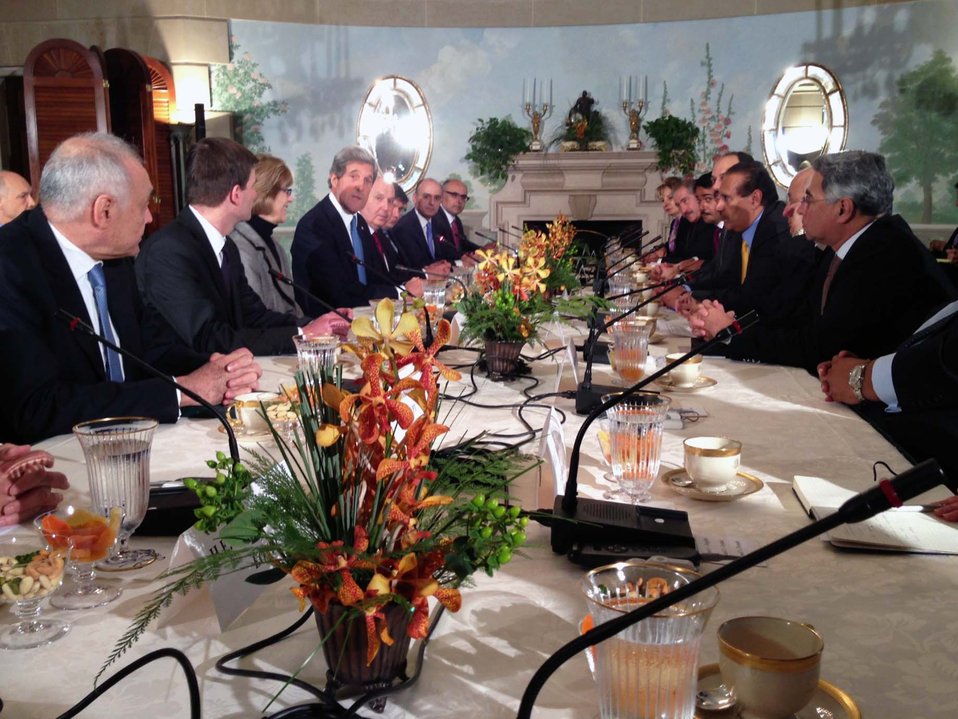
Secretary Kerry Holds a Meeting with the Arab League Delegation

U.S. Secretary of State John Kerry holds a meeting with the Arab League delegation, led by Qatari Prime Minister and Foreign Minister Sheikh Hamad bin Jassim bin Jabr Al-Thani, at the Blair House in Washington, D.C., on April 29, 2013.